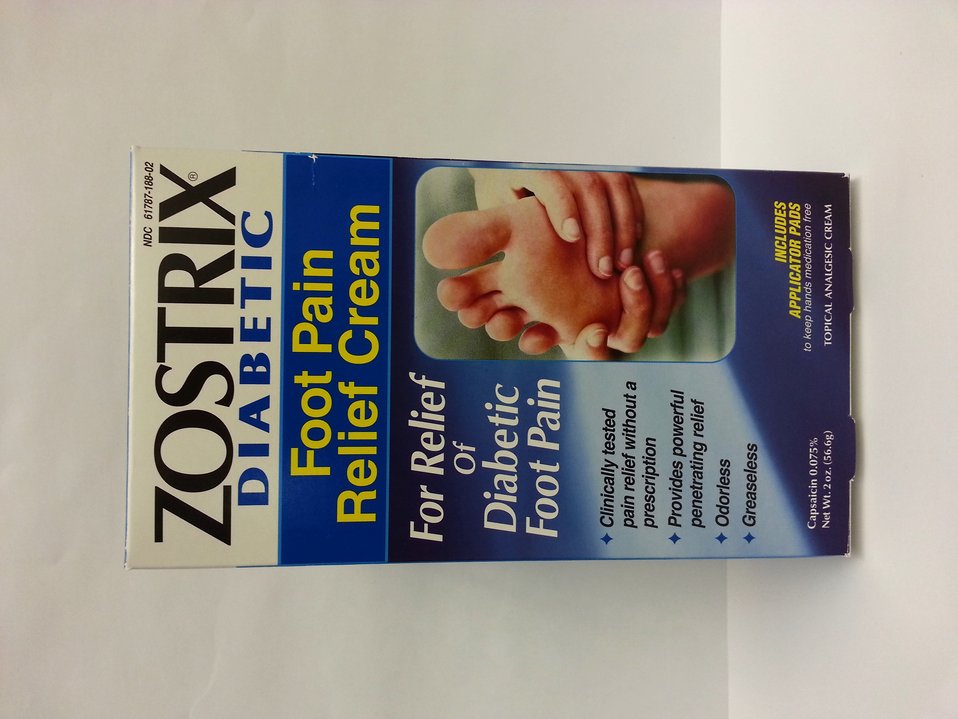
Illegally Sold Diabetes Treatments - Zostrix Diabetic Foot Pain Relief

This product is an illegally sold homeopathic drug. FDA warns consumers to avoid illegally sold and potentially unsafe products sold as treatments for diabetes.